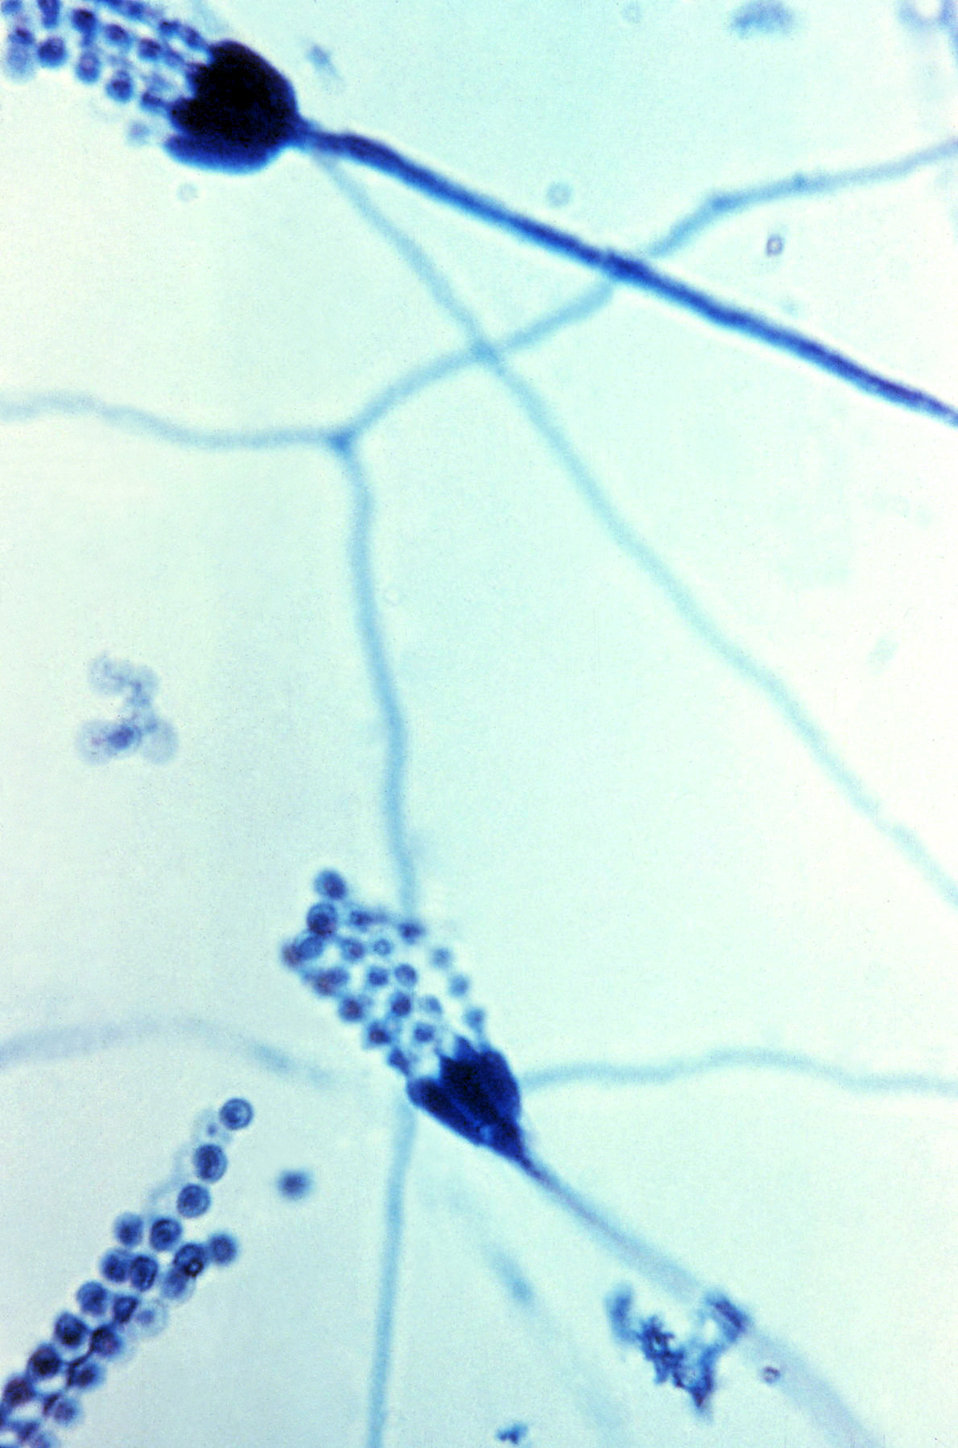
Photomicrograph of Penicillium fungus

Magnified at 970x, this 1971 photomicrograph depicted a number of Penicillium glabrum conidiophores of a Penicillium glabrum fungus. The fungal conidiophore is a stalked structure, the distal end of which produces the asexual spores, known as conidia, through a process of budding.